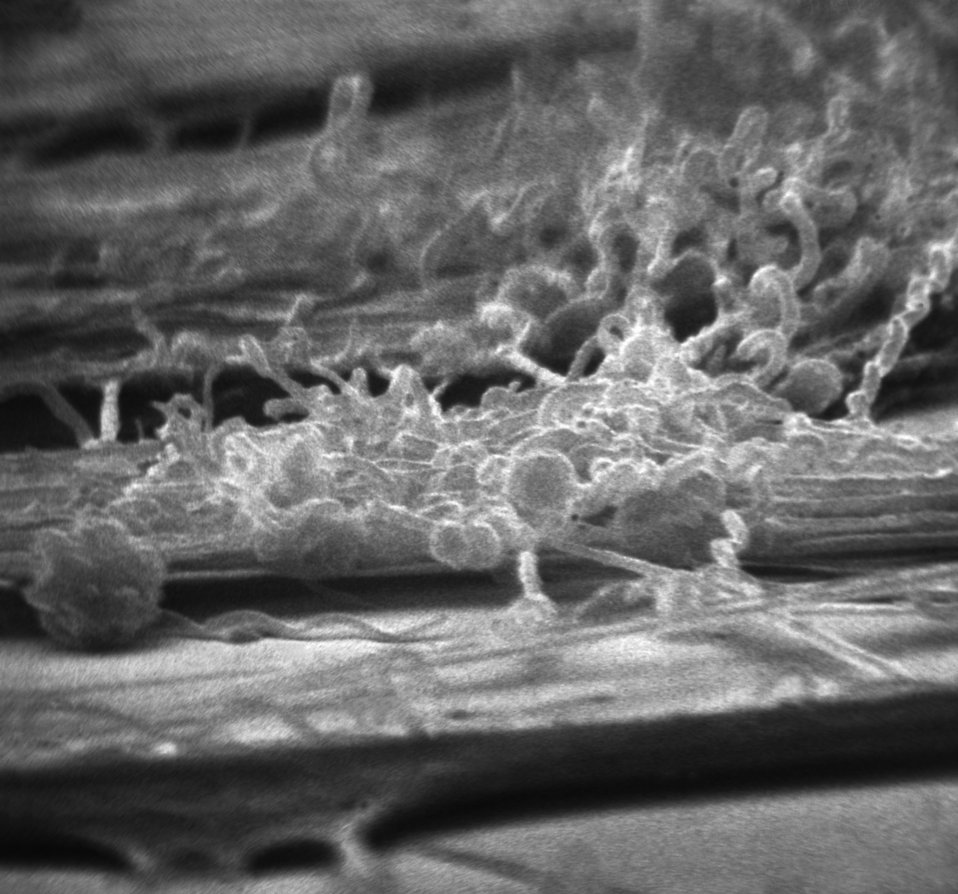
Electron micrograph of Treponema pallidum on cultures of cotton-tail rabbit epithelium cells (Sf1Ep).